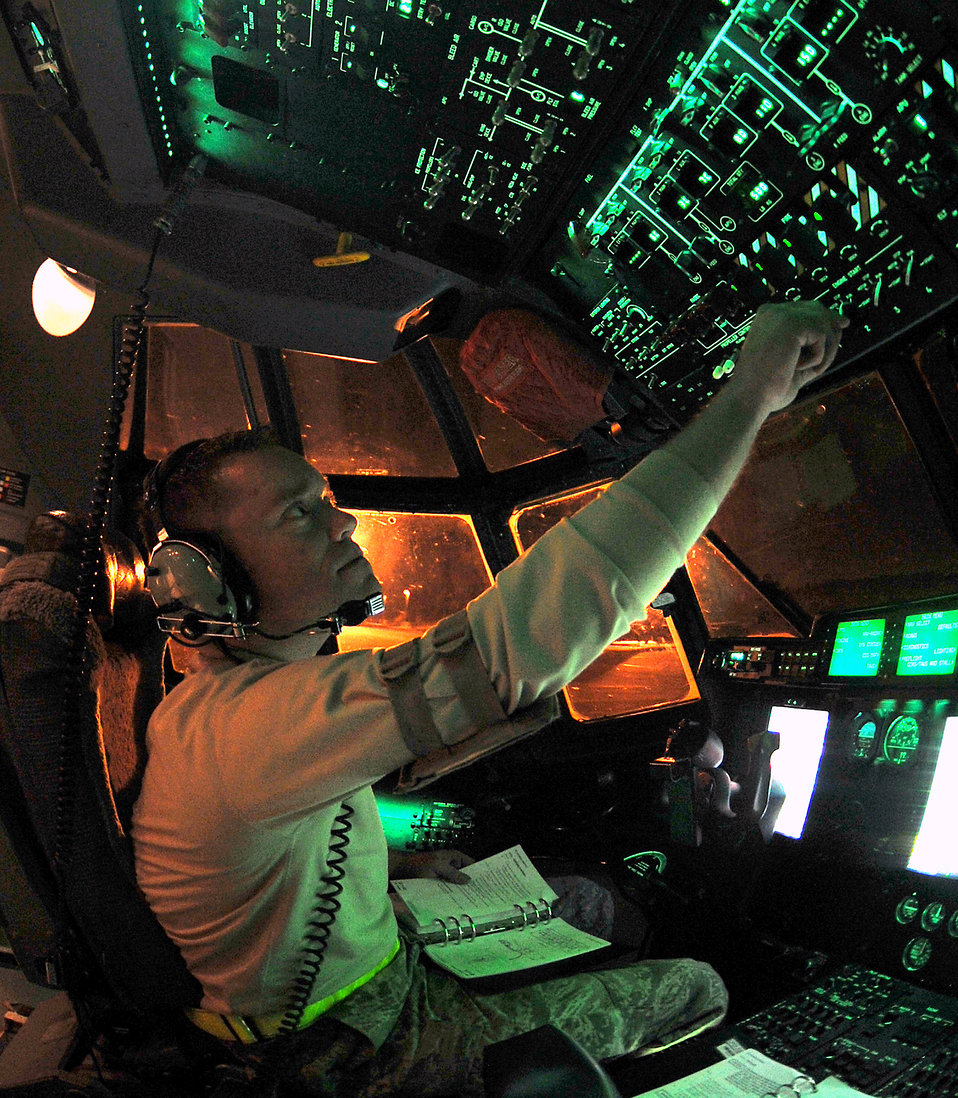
C-130 maintenance operations

Staff Sgt. Troy Miller checks fuel tank levels from the flight deck of a C-130 Hercules March 24, 2011, at Little Rock Air Force Base, Ark. Sergeant Miller is a panel operator assigned to the 19th Component Maintenance Squadron.